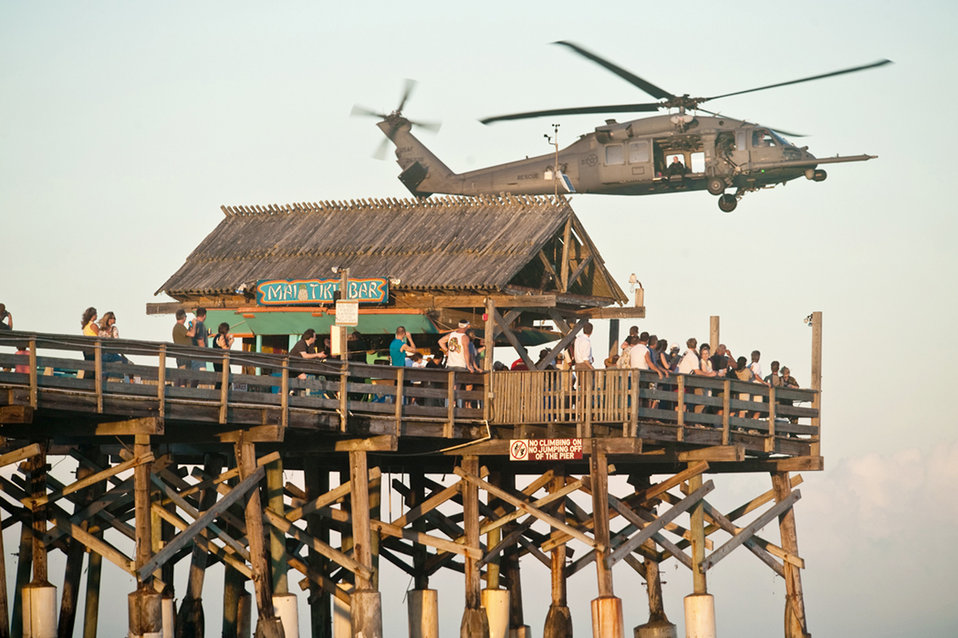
Pararescuemen participate in Air Force Week

Pararescuemen fly past a crowd on the Cocoa Beach Pier in an HH-60G Pave Hawk during an Air Force Week water rescue demonstration Oct. 27, 2010, at Cocoa Beach, Fla. Air Force Week Cocoa Beach is a weeklong event is meant to showcase Air Force capabilities and increase public awareness. The pararescuemen are from the 920th Rescue Wing at Patrick Air Force Base, Fla.